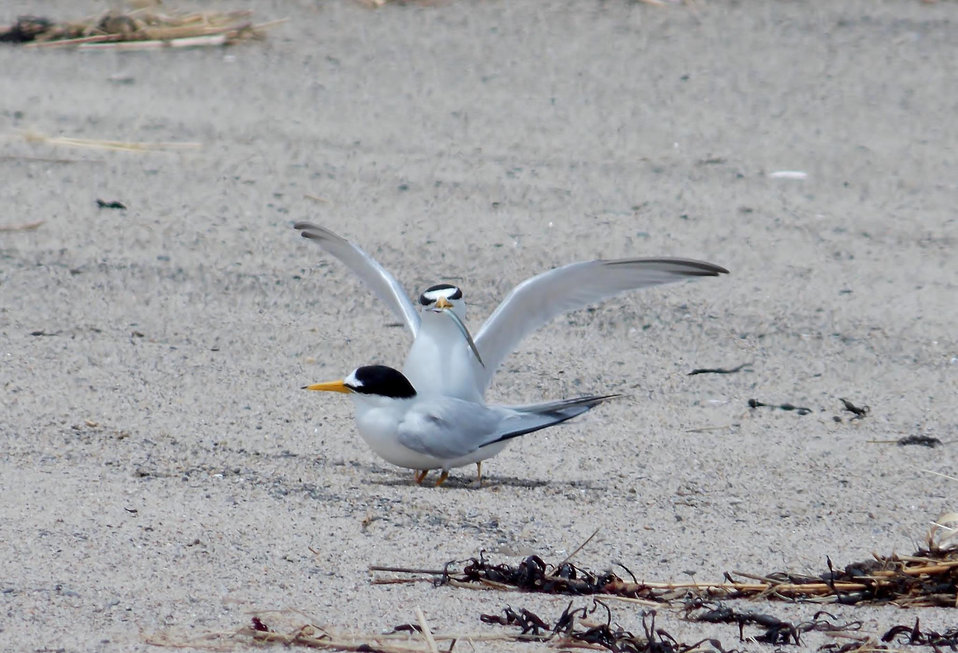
Photo of the Week - Least Terns (ME)

Photo of the Week - 2/11/13

Least tern males wave a fish at females as part of a courtship offering to secure their pair bond. Are you planning anything special for your valentine this year?

Credit: Kaiti Titherington/USFWS

www.fws.gov/refuge/rachel carson/